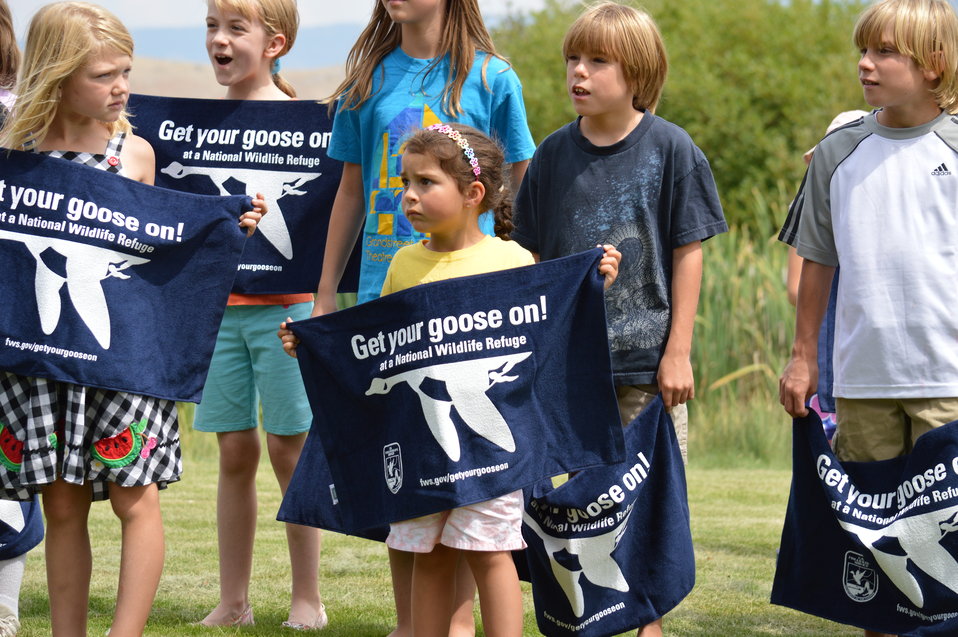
Get Your Goose On! - National Elk Refuge Style

On August 10, 2012 the U.S. Fish and Wildlife Service and Partners celebrated the 100 year anniversary of the establishment of the National Elk Refuge. In these photos, young attendees, along with Puddles the Blue Goose and the National Elk Refuge's mascot, showed us how to Get Your Goose On! with style.